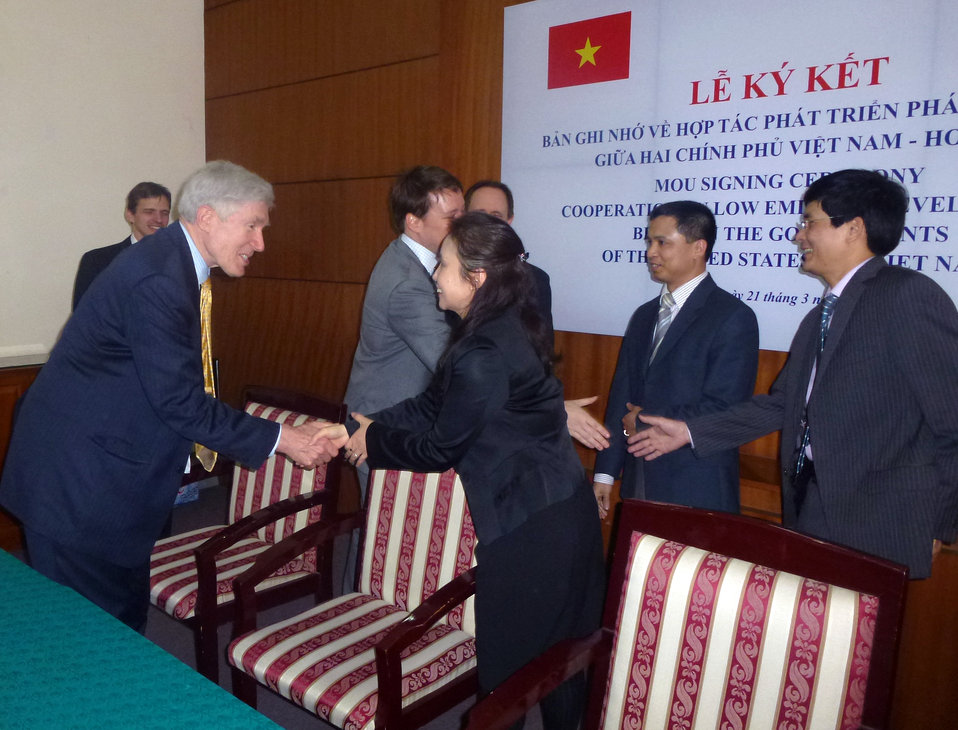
U.S.-Vietnam MOU on Low Emissions Development Strategies Signing Ceremony